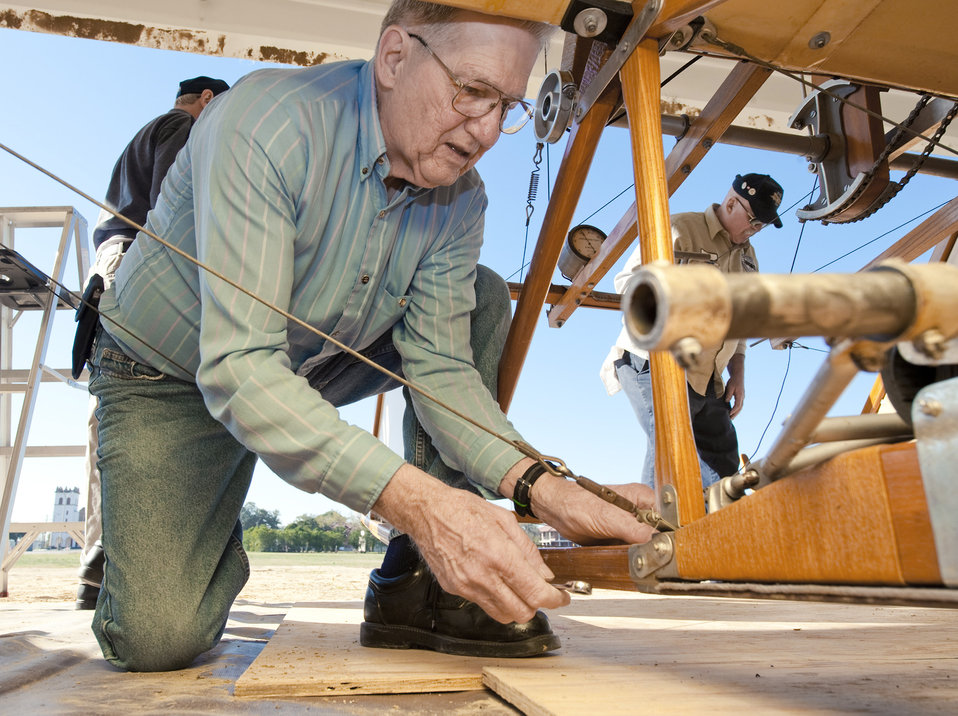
Frank Goepferich tightens a structural cable to the under carriage on